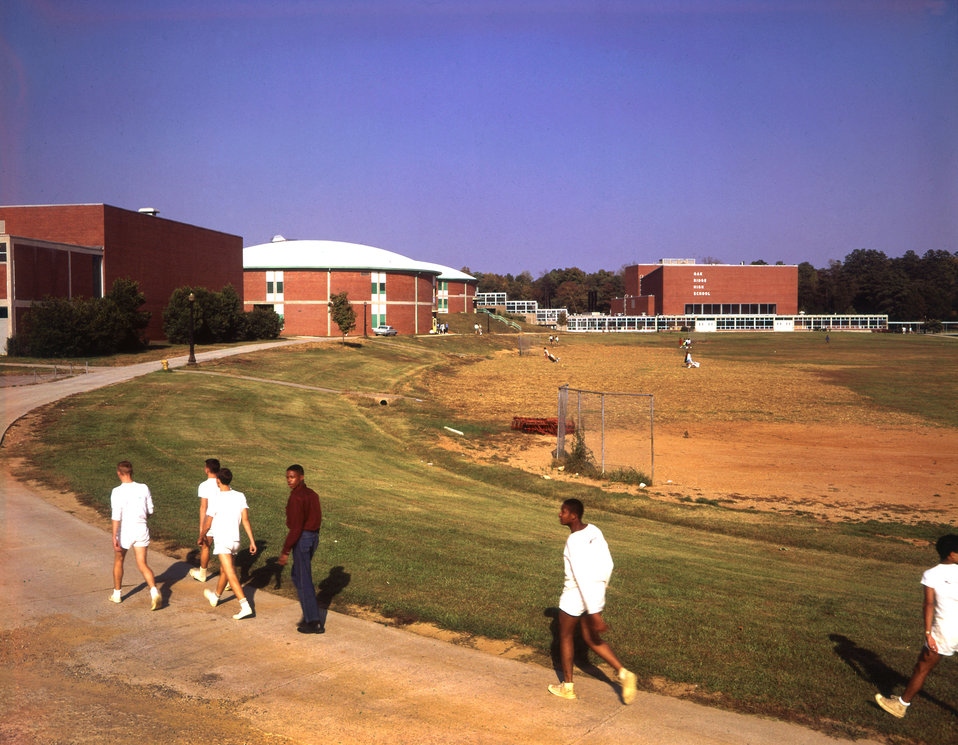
Oak Ridge High School

DOE photo by Ed Westcott 1960s Oak Ridge Tennessee